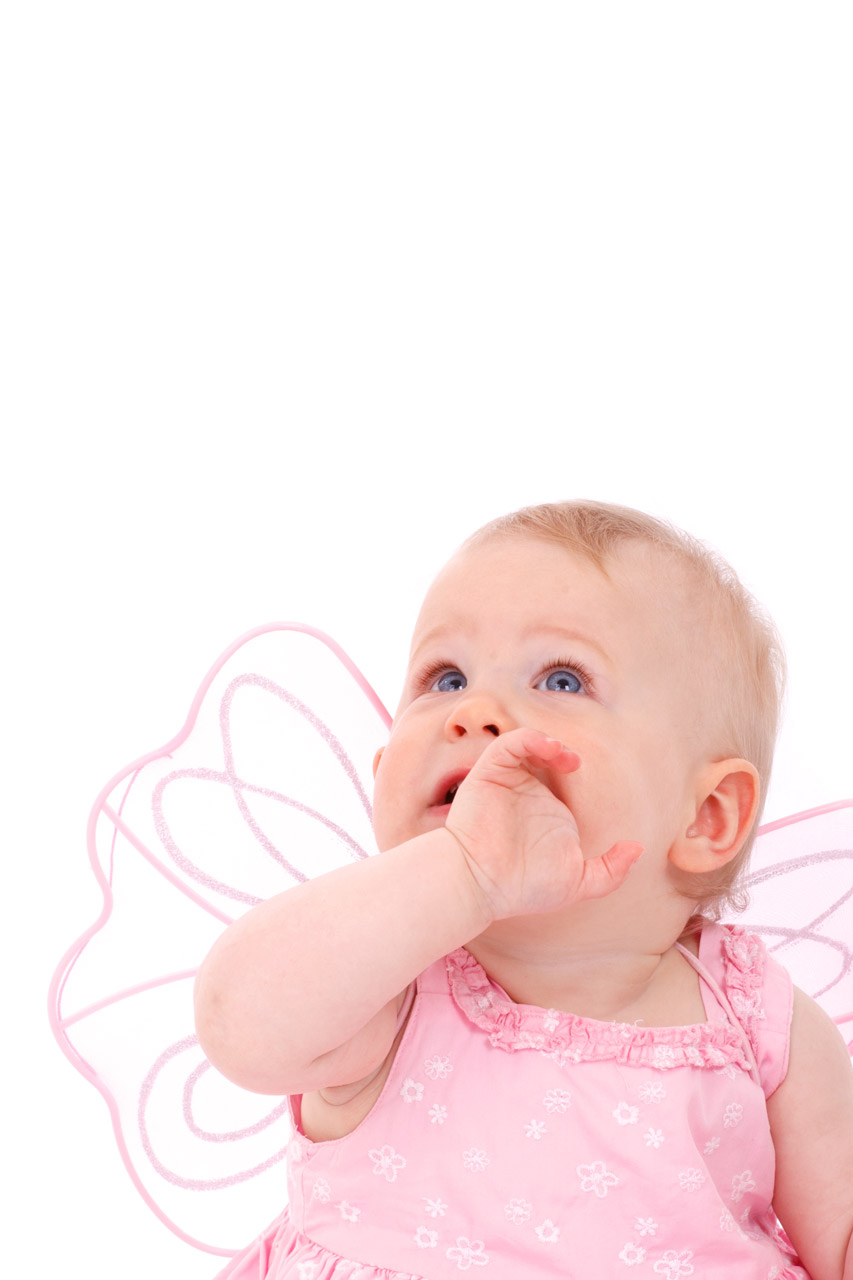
Baby looking up

Baby girl in pink fairy dress isolated on white background is looking up.